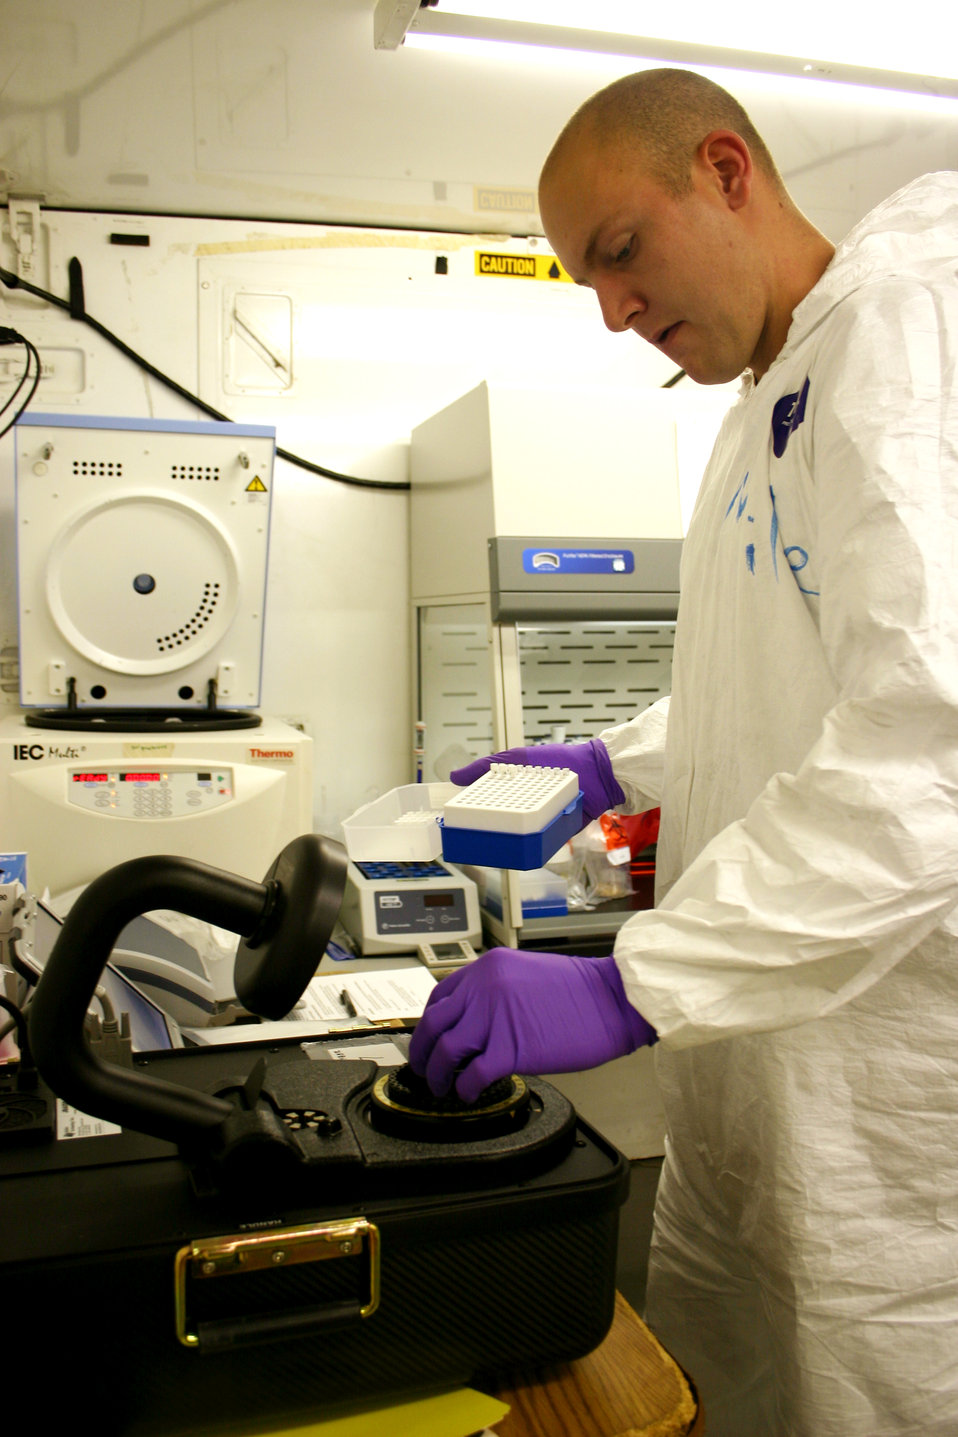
DOD tests 'revolutionary' biological warfare detection device

BROOKS CITY-BASE, Texas -- Army Spc. Paul Miller loads the joint biological agent identification and diagnostic system analyzer carousel with samples. It takes the system about 40 minutes to process a sample once the extraction process of a suspect biological warfare agent specimen is complete. Specialist Miller is from the 9th Area Medical Laboratory at Aberdeen Proving Ground, Md.